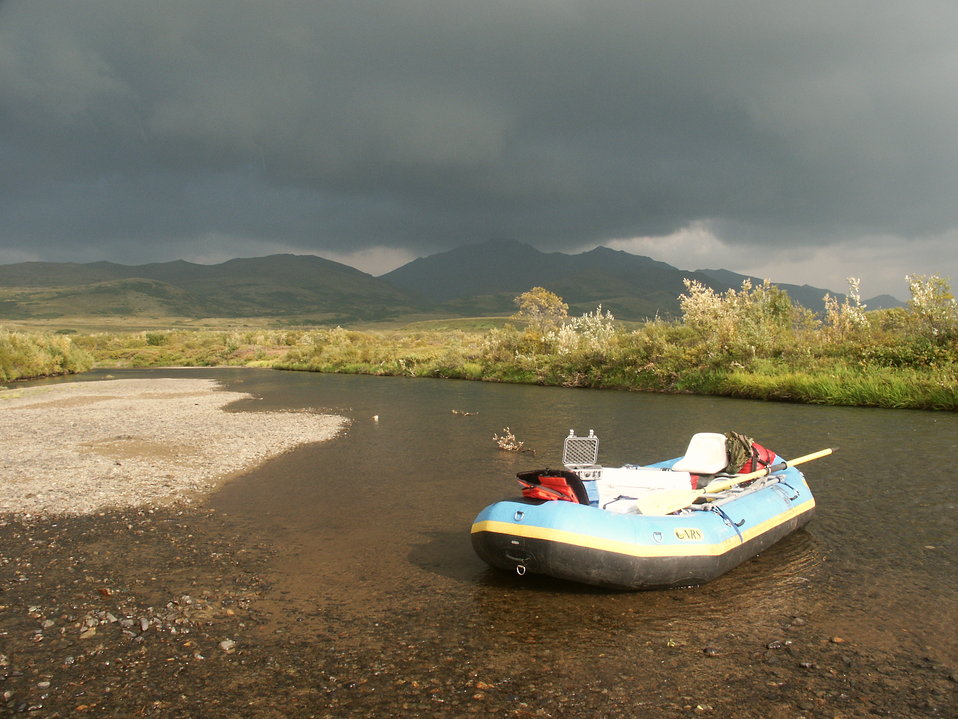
Typical Weather

Weather can be temperamental. The day can start out sunny and clear and end cloudy with a chance of rain. Field crews must be prepared for whatever mother-nature may bring.

USFWS Yukon Delta NWR